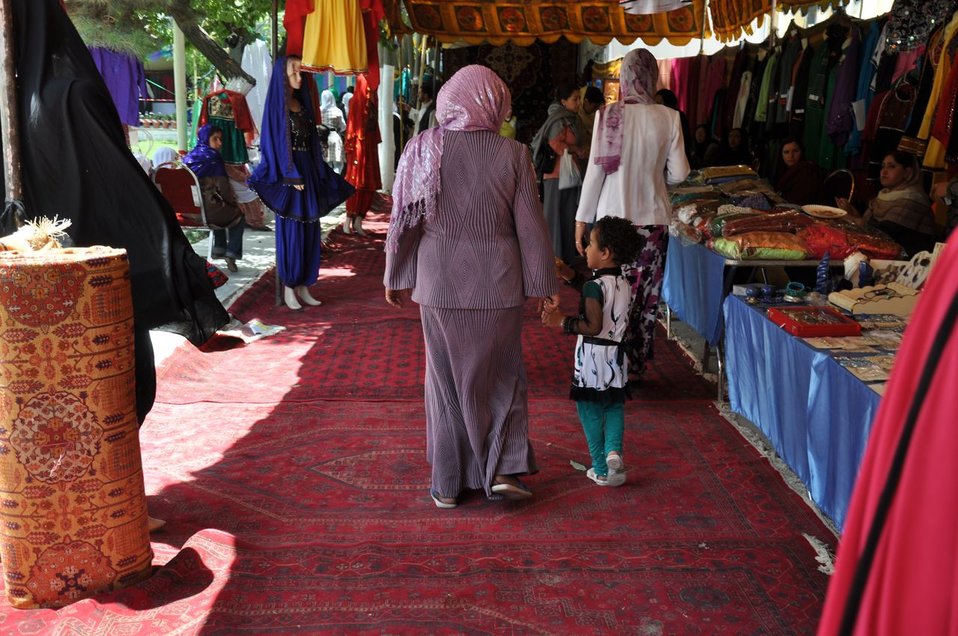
Mother's Day in Afghanistan

Mother and daughter walk through the bazaar.